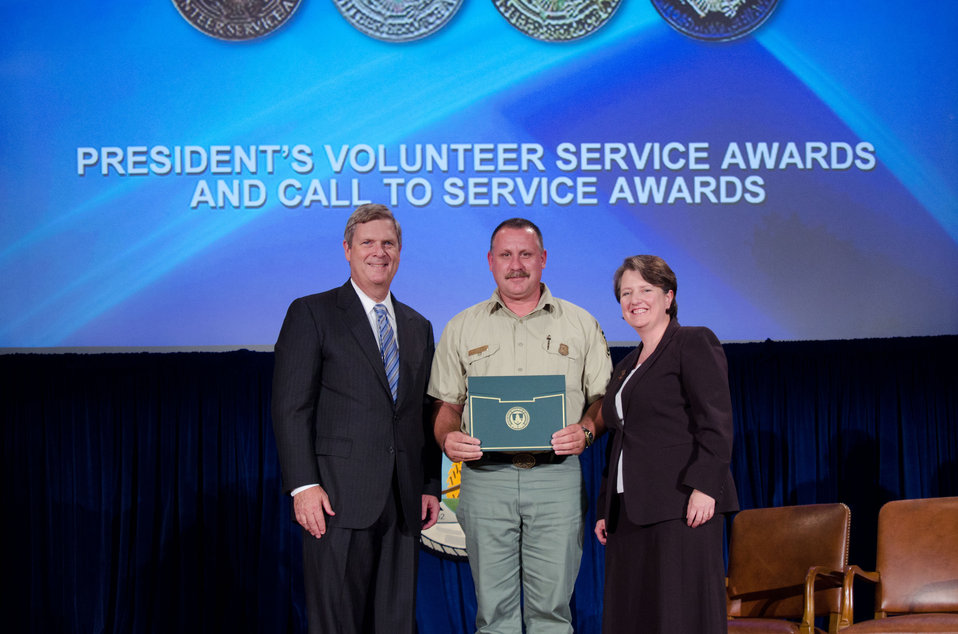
Agriculture Secretary Tom Vilsack (l) and Deputy Secretary Kathleen Merrigan (r), presents the President’s Volunteer Service Awards and Call to Service Award to Kelly Shaw, Forest Service. On Wednesday, September 14, 2011 in the Jefferson Auditorium at the US Department of Agriculture in Washington, DC.